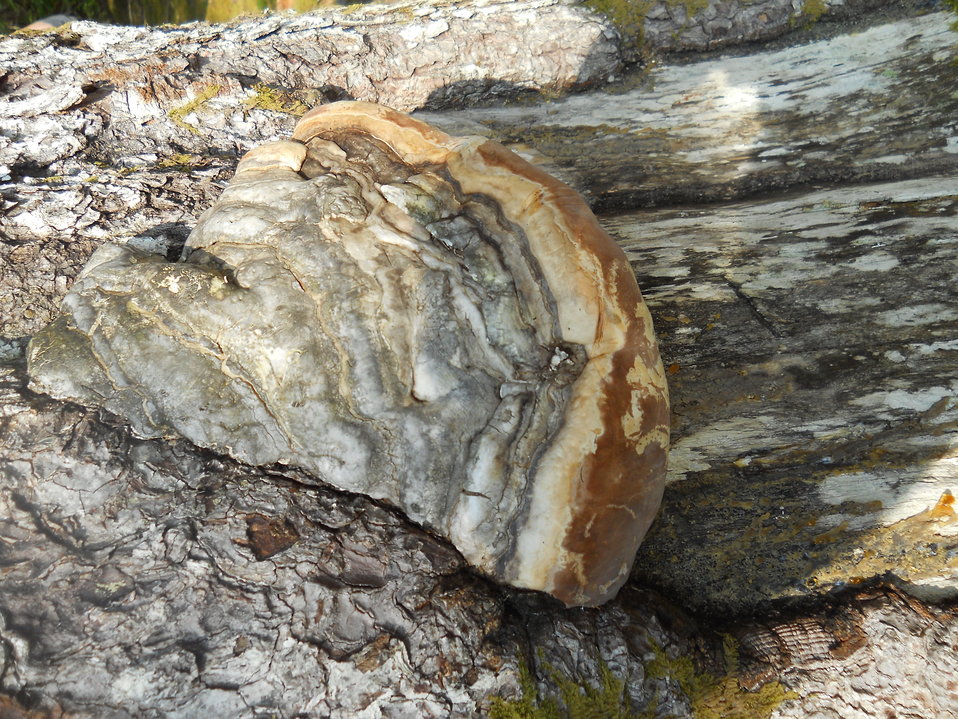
Conch Fungus

Credit: USFWS
Photo taken by a Salmon Camp participant during a nature photography activity.

Source and Contact: Kodiak National Wildlife Refuge